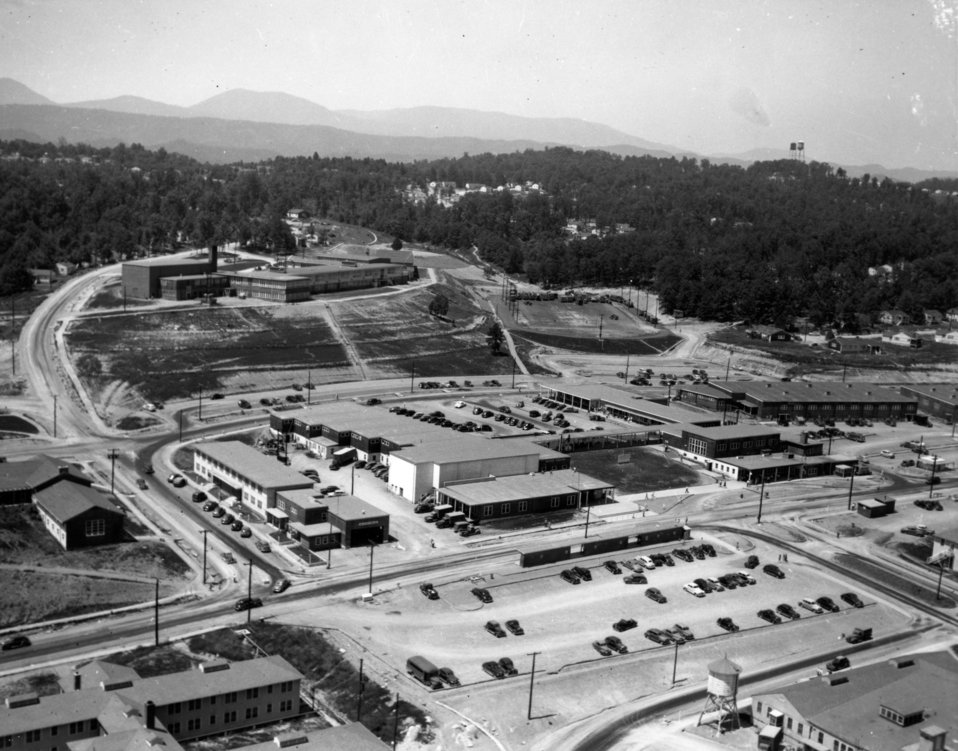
Aerial of Oak Ridge